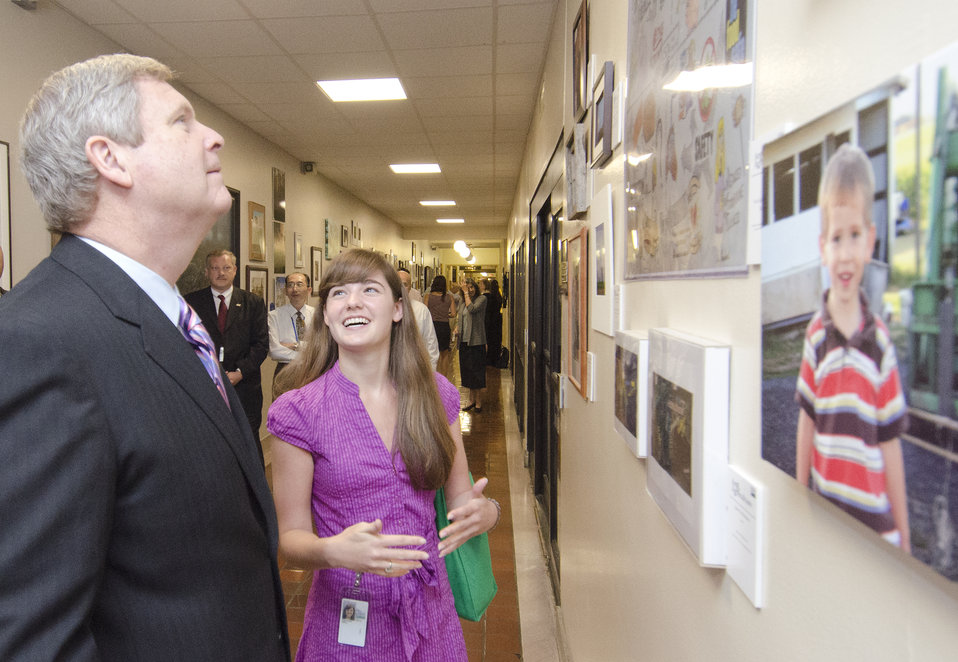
Erin Rhinehart discusses her artwork with Agriculture Secretary Tom Vilsack during his visit to the gallery of winning entries and some of the employee artists from the inaugural competition for Art and Agriculture, Thursday, May 31, 2012, in the South Building, Washington, D.C. U.S. Department of Agriculture (USDA) full-time and part-time employees submitted art based on ten agricultural themes. The event was part of USDA's 150th Anniversary celebration and the winning artwork is on display from May 15 through December 31, 2012. Artistic expression is a creative outlet that is vital for an individual to grow and develop in their environment.